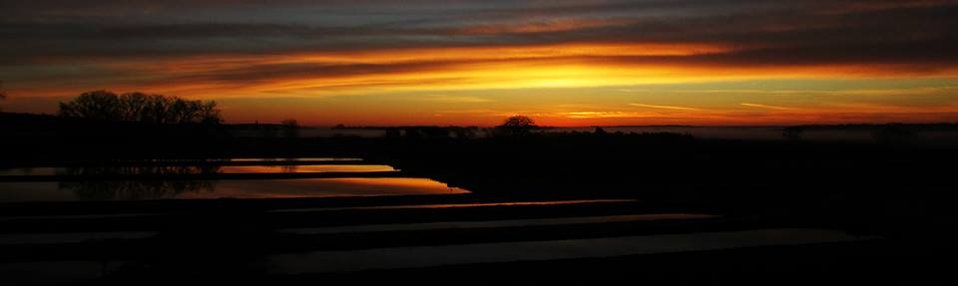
Hatchery Sunrise

Here is what a sunrise on the hatchery looks like.